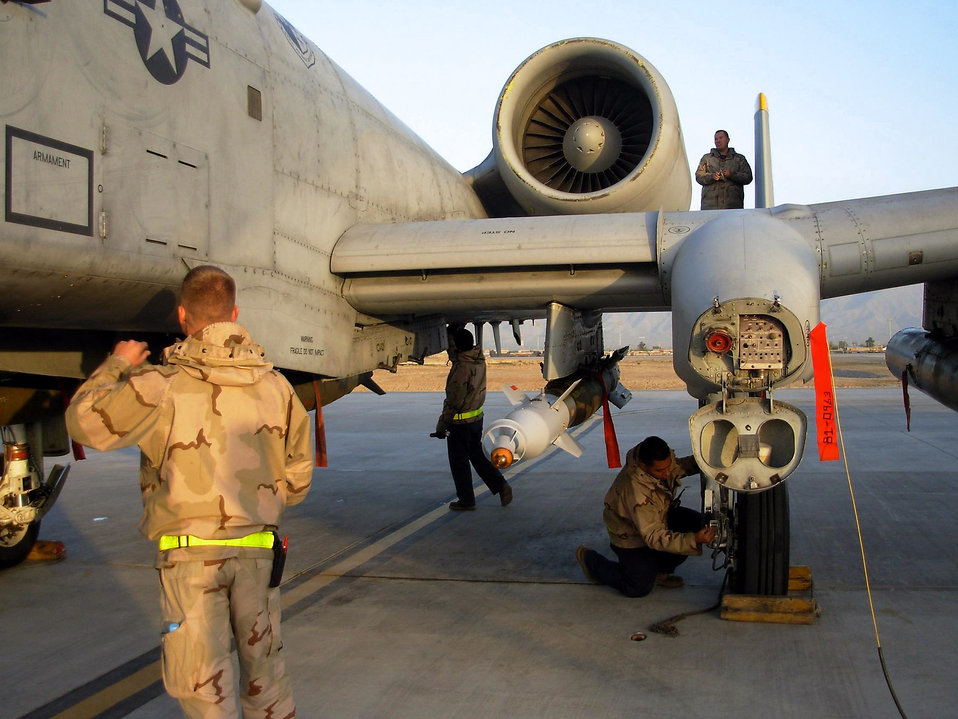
Keeping the A-10 fit to fight

During a thru-flight inspection of an A-10 Thunderbolt II at Bagram Air Base, Afghanistan, Senior Airmen Justin Lovejoy (left) and Mike Pena (center) examine the fuselage while Staff Sgt. Isaac Ibarra inspects the breaks. Up on the wing, Staff Sgt. Shawn Mercier performs an intake and exhaust inspection on the aircraft's engine. The crew chiefs, assigned to the 81st Expeditionary Aircraft Maintenance Unit, are deployed from Spangdahlem Air Base, Germany.